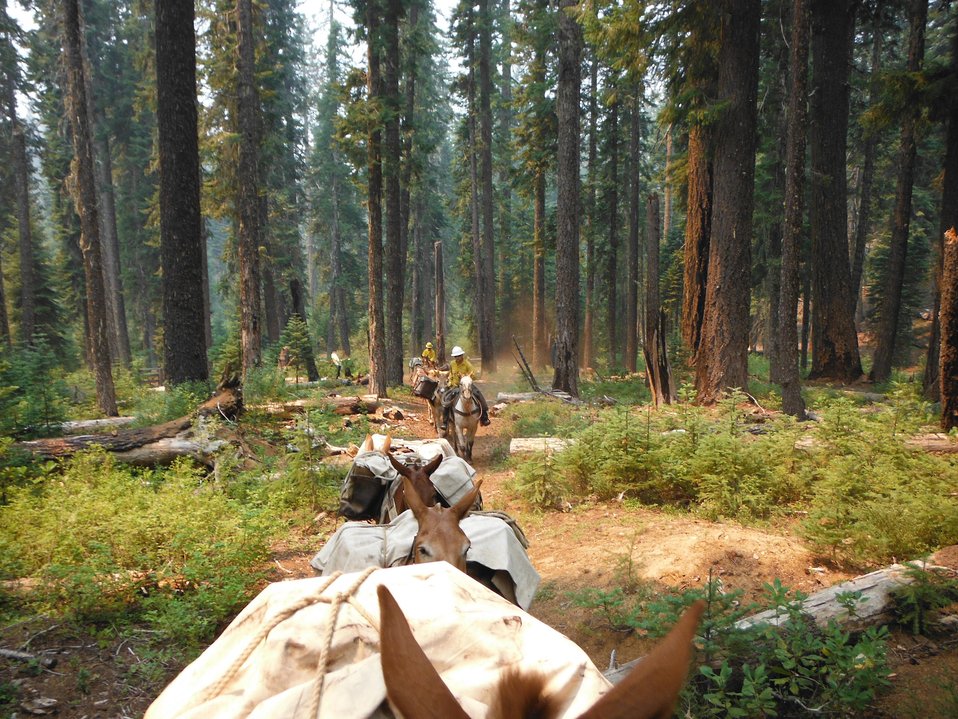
U.S. Forest Service packhorses and mules aid in the support of firefighters at the Corral Complex Fire. The Corral Complex Fire in the Six Rivers National Forest near the Trinity Alps Wilderness area in California began on Aug. 10, 2013 by lightning and has consumed approximately 12,272 acres and is 67% contained.